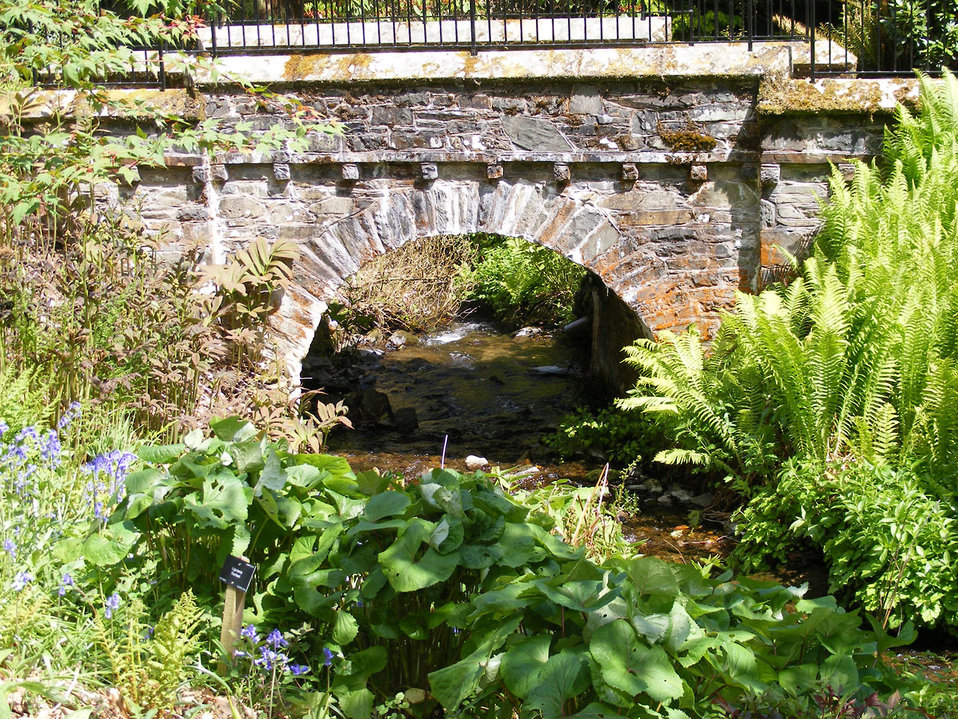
Rustic bridge

Dawyck botanic gardens, by peebles.